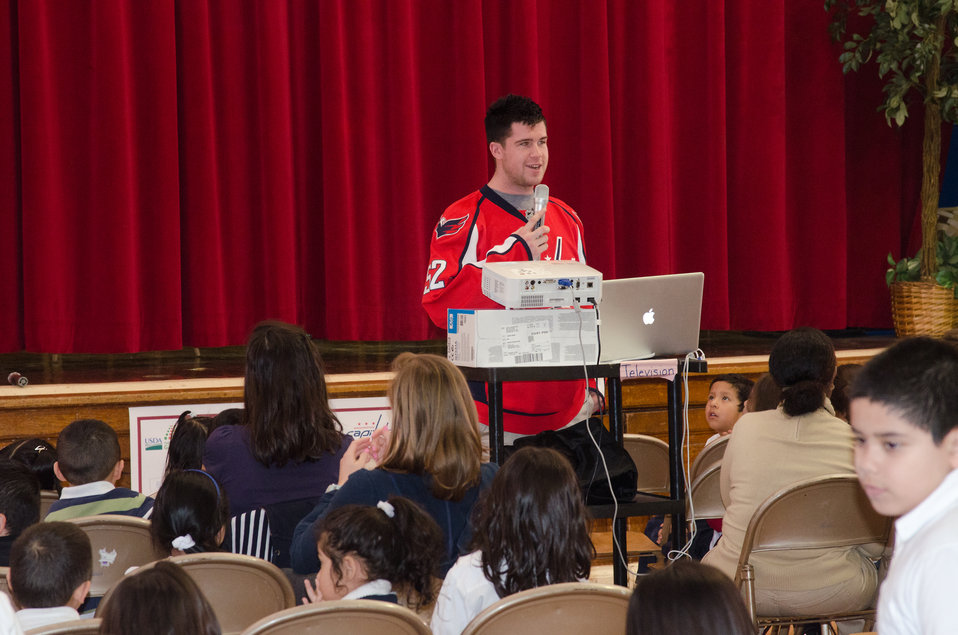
Washington Capitols is Defenseman, Number: 52 Mike Green (standing) is part of the People’s Garden team for W. B. Powell Elementary School, consisting of the Washington Capitols, U.S. Department of Agriculture and D.C. Public Schools in Washington, D.C., who revealed to 289 parents and students, the School Garden Design Concept on Thursday, March 10, 2011. The design draft was created by Forest Service landscape architect Matt Arnn, with the support of Natural Resources Conservation Service landscape architect Bob Sneickus, Outreach and Education Coordinator Annie Ceccarini and Project Manager Leslie Burks who worked with the Principal Janeece Docal and the school during an earlier visit to develop illustrated ideas from parents and students. Representing the Washington Capitols is Defenseman, Number: 52 Mike Green, Comcast SportsNet Analyst Alan May and Director of Community Relations Elizabeth Wodatch.